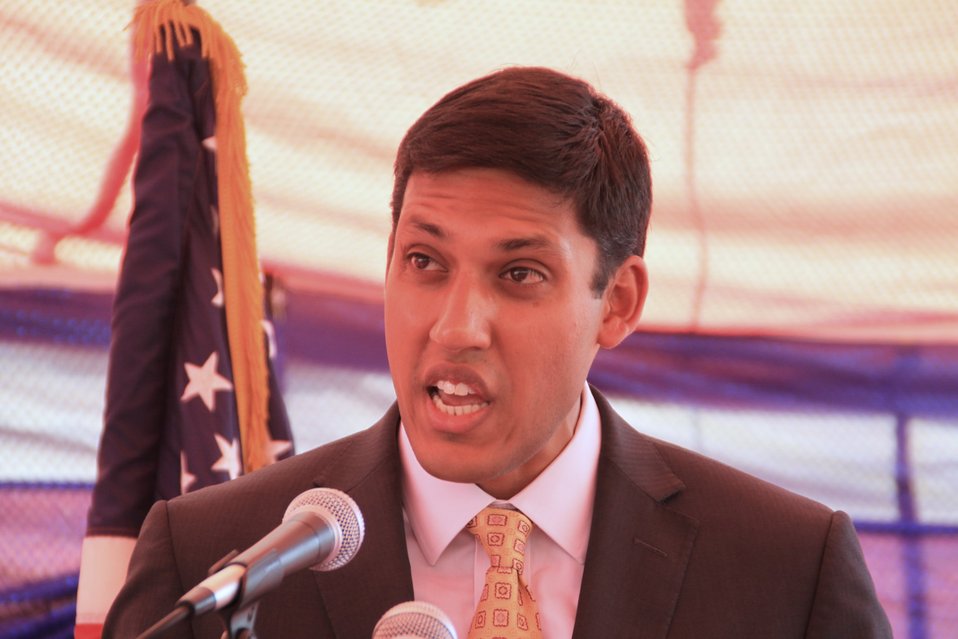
Badam Bagh Farm